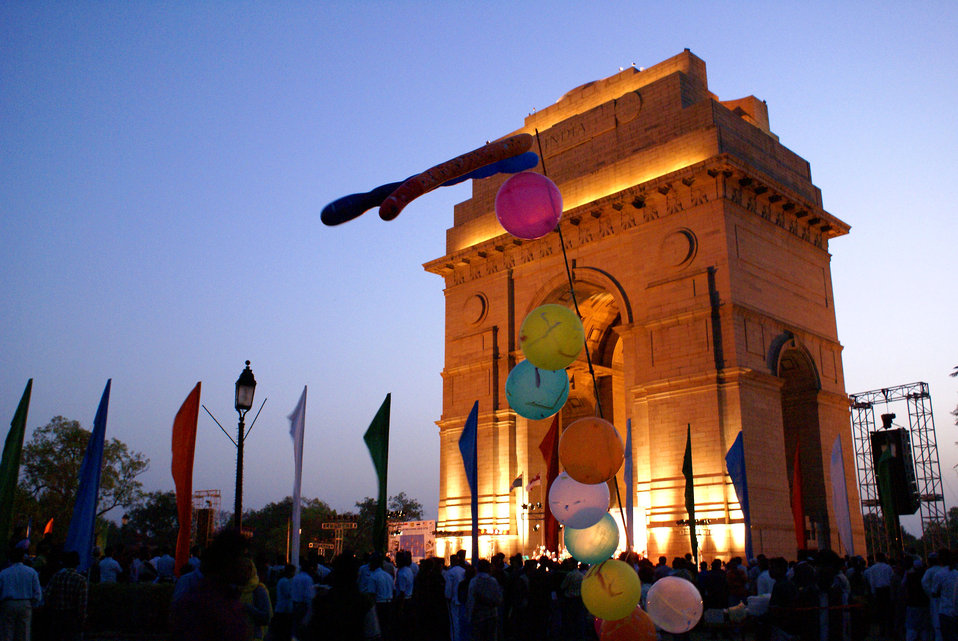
PACAF band entertains at Indian Air Force jubilee

The lights of the India Gate in New Delhi illuminate the stage for bands participating in the Indian Air Force Platinum Jubilee Tattoo March 17. The Indian Air Force invited the Pacific Air Forces rock band Pacific Trends to take part in the multinational celebration, which included military bands from India, Singapore, Sri Lanka and Thailand. The IAF celebrates its 75th birthday this year.